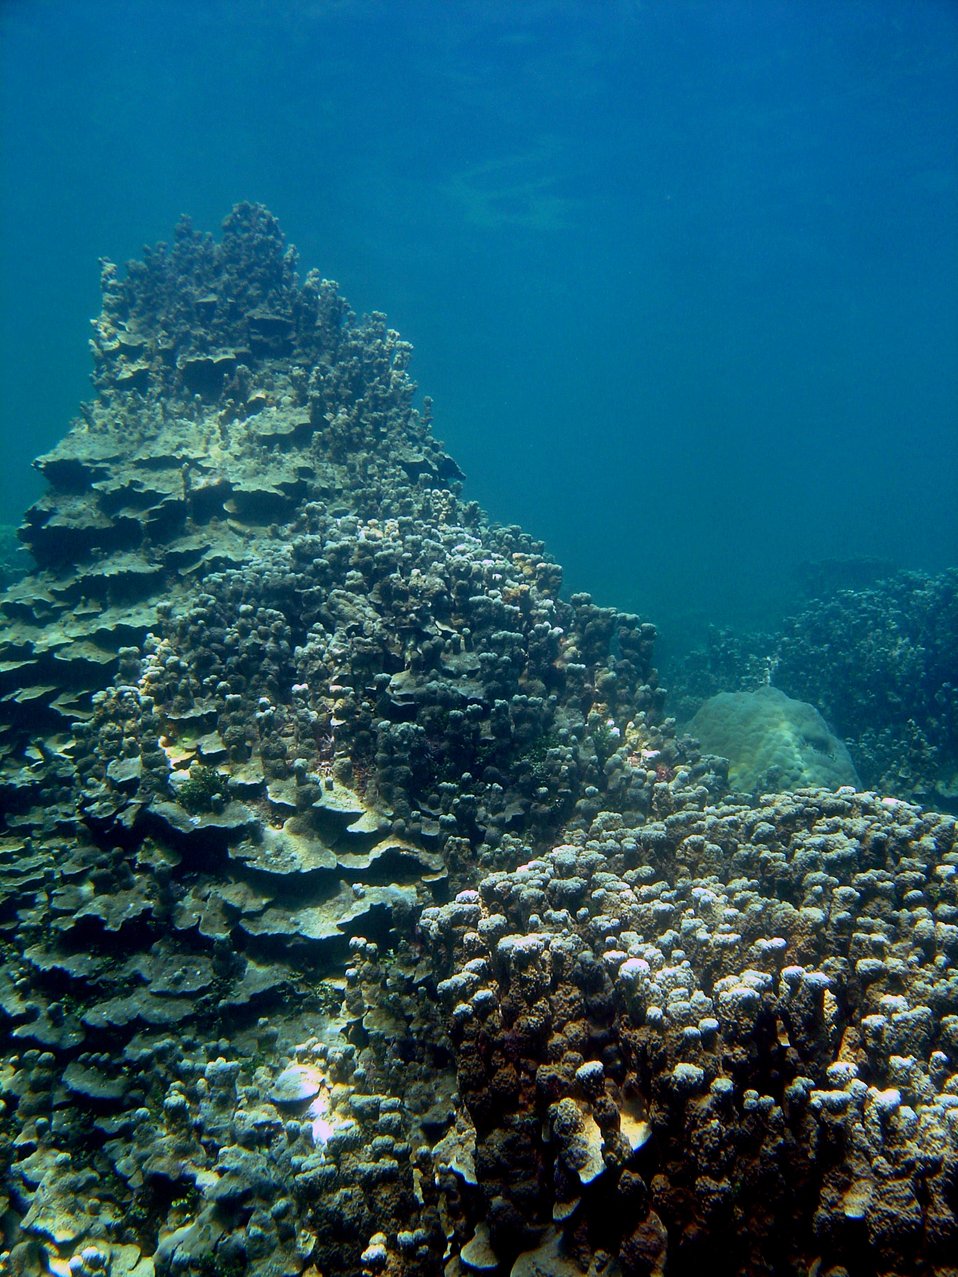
Reef scene